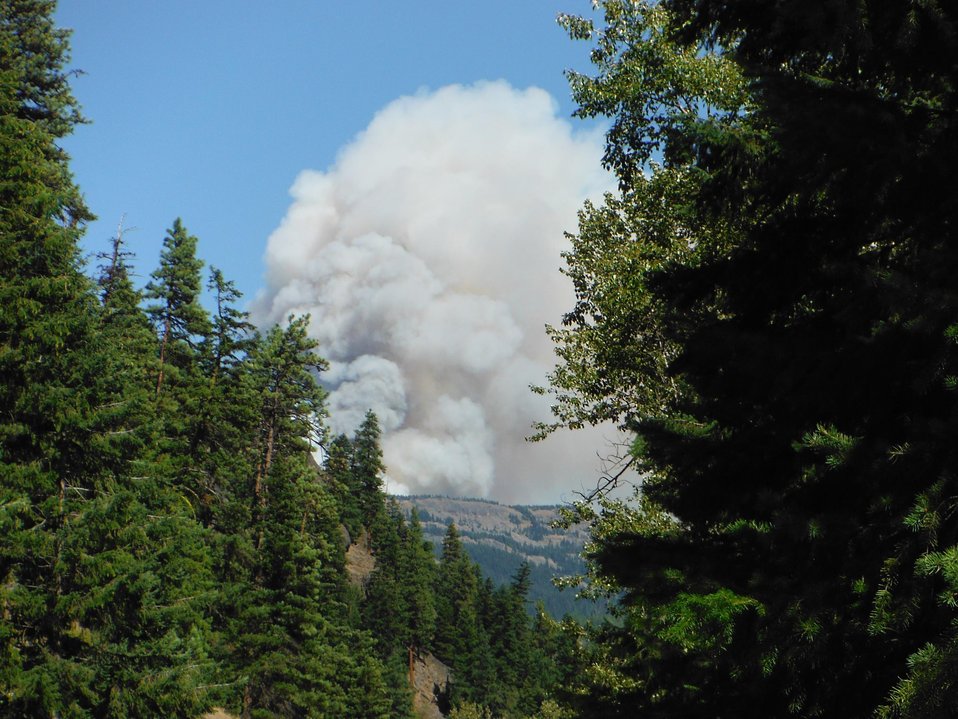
The Manastash Ridge Fire in the Wenatchee National Forest near in Cle Elum, WA began on Aug. 9, 2013 began by lightning has consumed approximately 2,352 acres and is 40% contained.